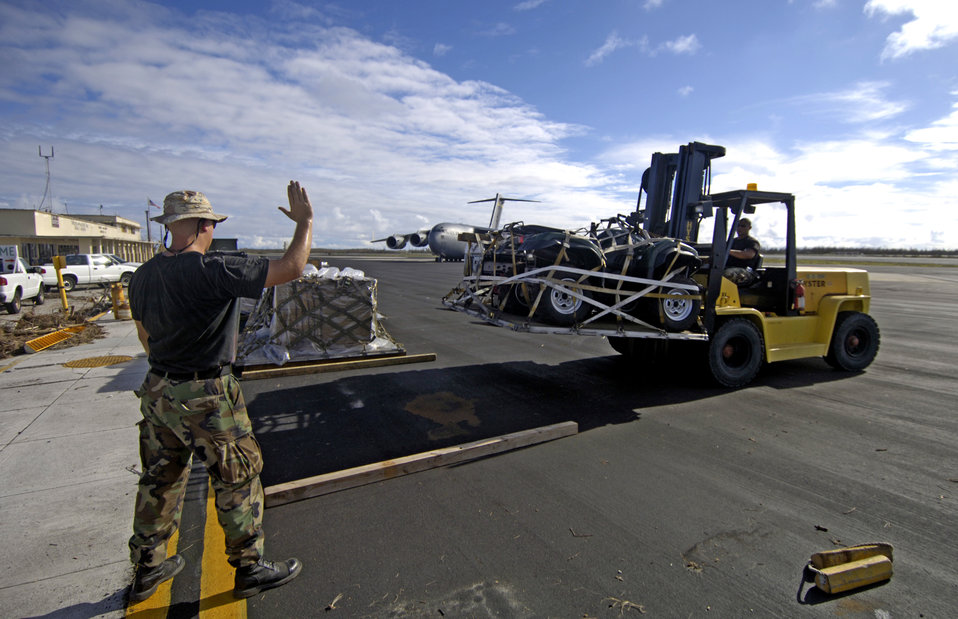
Hickam team begins Wake Island assessment

Staff Sgt. Ronald White lines up pallets on the Wake Island flightline Sept. 12, which were offloaded from the C-17 Globemaster III in the background. Sergeant White is with the 36th Contingency Response Group at Andersen Air Force Base, Guam. The group is assisting a 53-person team assessing damage left by Super Typhoon Ioke after it hit the island Aug. 31.